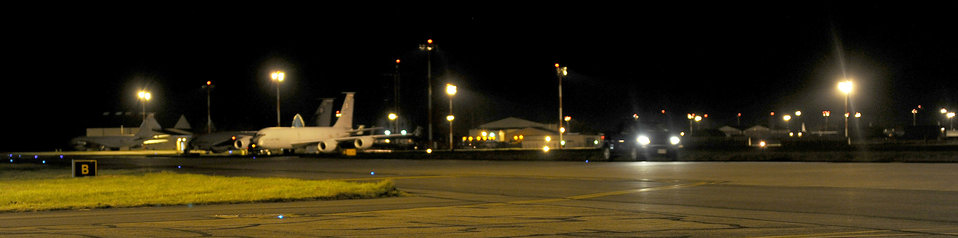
Joint Task Force Odyssey Dawn

110319-F-DE018-067 -- RAF MILDENHALL, England (March 19, 2011) -- Personnel from the 100th Air Refueling Wing prepare KC-135 Statotankers for a refueling mission in support of Joint Task Force Odyssey Dawn. JTF Odyssey Dawn is the U.S. Africa Command task force established to provide operational and tactical command and control of U.S. military forces supporting the international response to the unrest in Libya and enforcement of United Nations Security Council Resolution (UNSCR) 1973. UNSCR 1973 authorizes